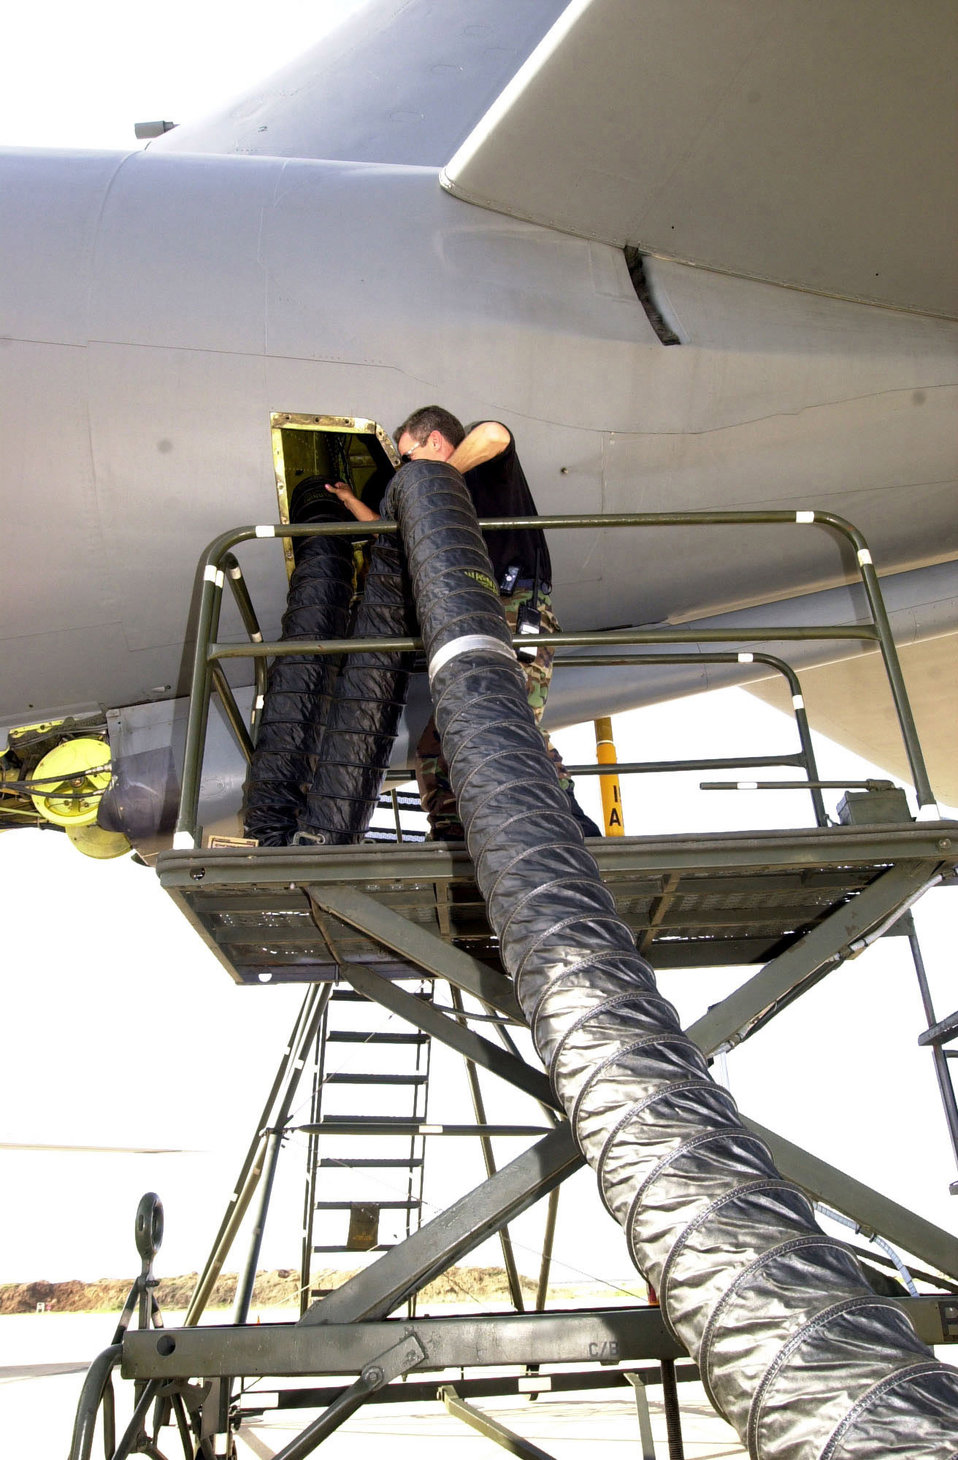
Sveom

OPERATION ENDURING FREEDOM -- Master Sgt. Stacy Sveom from the Nebraska Air National Guard runs a ventilation hose to a KC-135R Stratotanker to ventilate the aircraft after a possible fuel leak was discovered at an operating location in support of the U.S. Central Command execution of Operation Enduring Freedom. More than 29,000 people in the Air National Guard and Air Force Reserve have been called to active-duty to support Operations Noble Eagle and Enduring Freedom.